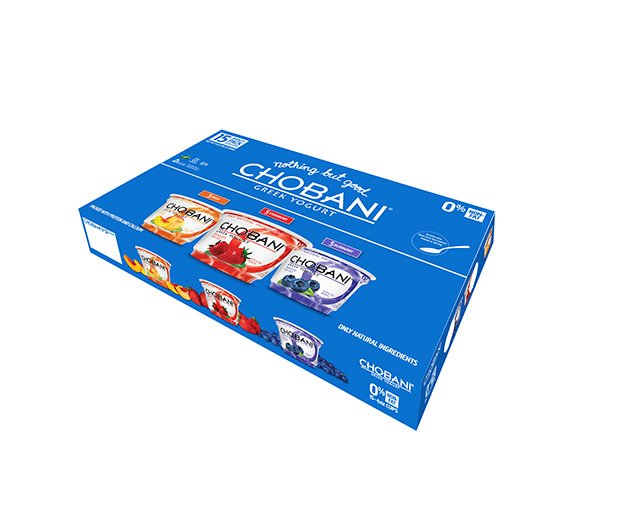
RECALLED – Greek yogurt products

September 6, 2013 – Product Recall – Chobani, Inc. Voluntarily Recalls Greek Yogurt Because of Product Concerns.